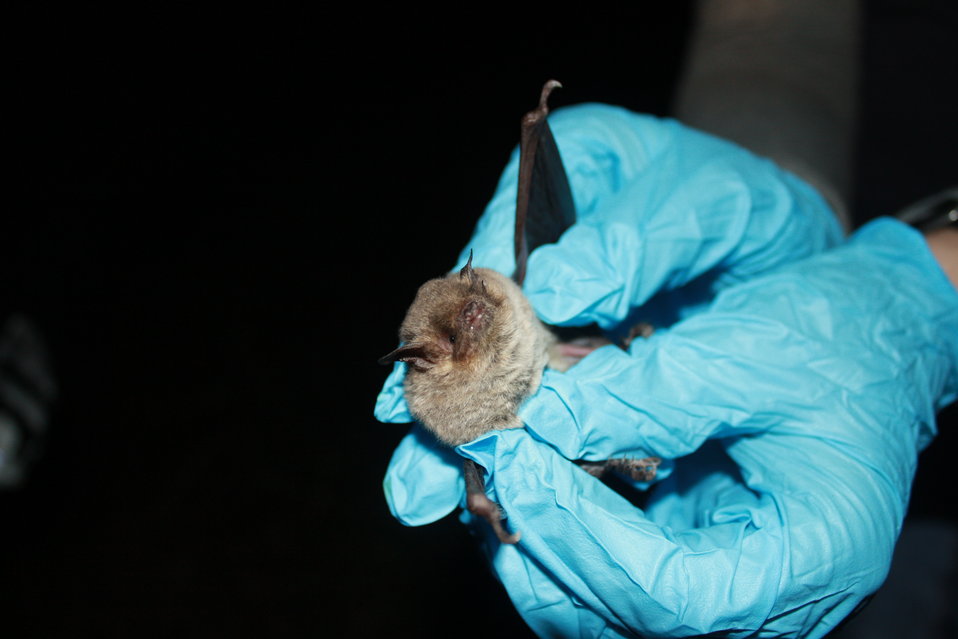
Photo of the Week - Biologist holding a gray bat

Photo of the Week - 10/6/10

U.S. Fish and Wildlife Service and Missouri Department of Conservation biologists at a gray bat survey site.

Credit: Ann Froschauer/USFWS

Learn about white-nose syndrome, a disease affecting bats across North America: www.fws.gov/whitenosesyndrome